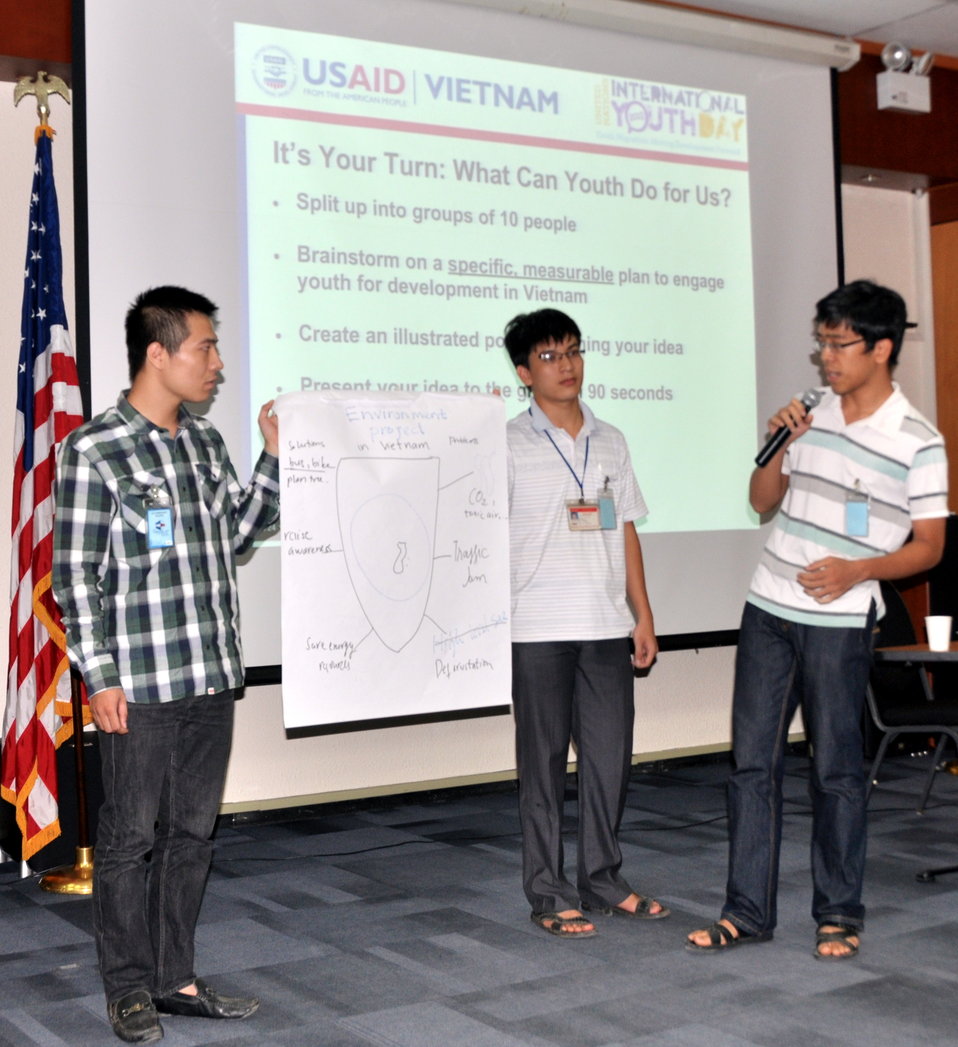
International Youth Day 2013: USAID hosts a lively discussion and group exercise on how youth can join in to advance development

Hanoi, August 12, 2013.